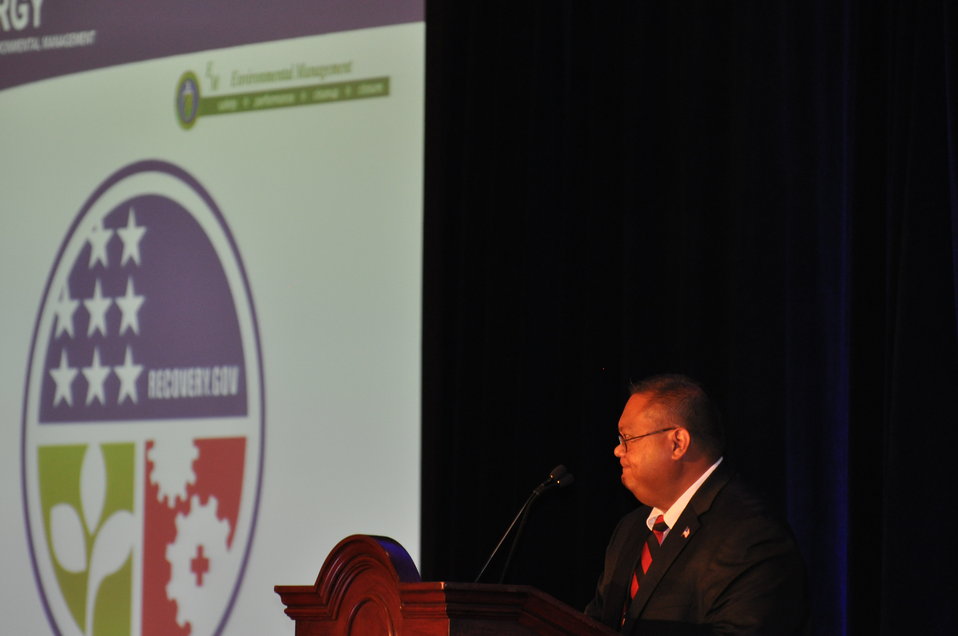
Information Exchange - Rod Rimando

Savannah River Site Recovery Act Program Deputy Director Rodrigo V. Rimando, Jr., provides Information Exchange attendees an overview of the two-day conference.